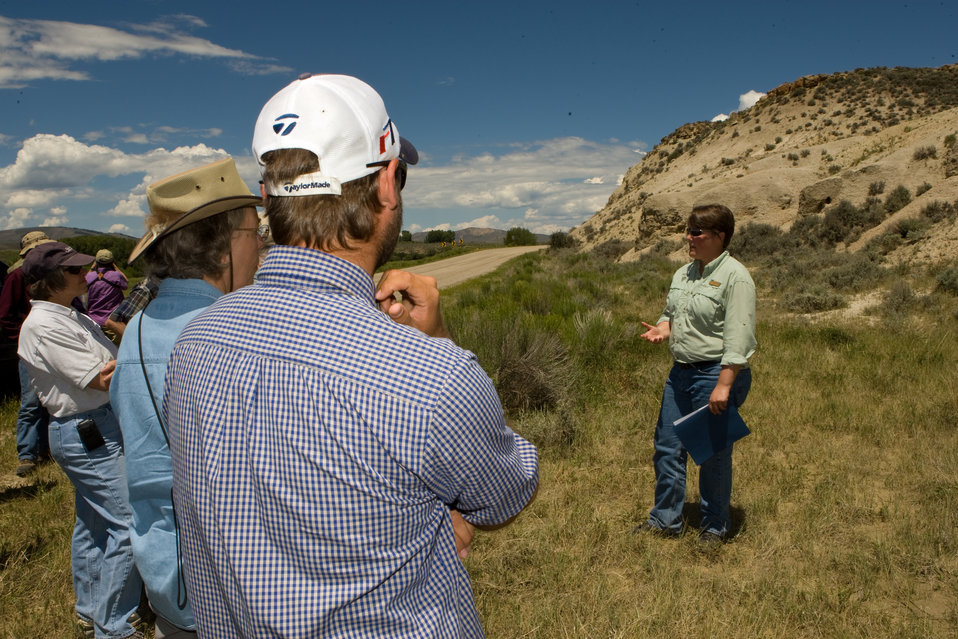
Colorado Rare Plant Conservation Initiative

The Colorado Rare Plant Conservation Initiative (RPCI) is a partnership of 23 statewide and regional agencies, private organizations, and academic institutions working to conserve 121 rare plants in Colorado. As part of these efforts the group developed the Colorado Rare Plant Conservation Strategy, developed Best Management Practices to reduce energy development impacts, addressed climate change, and developed focused strategies for the conservation of individual species at eight priority landscapes. The group has also worked to coordinate volunteer efforts for plant conservation across the state.